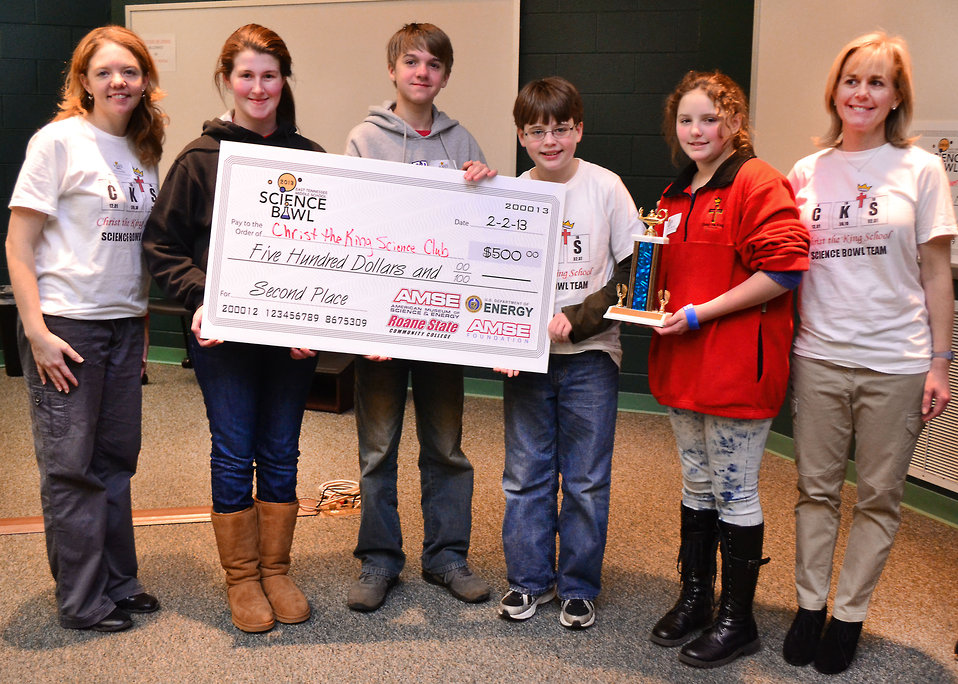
Christ the King School Second Place DOE Tennessee Middle School Science Bowl Oak Ridge

13-008 DOE photo Lynn Freeny DOE Tennessee Middle School Scence Bowl 2-2-2013 Oak Ridge Tennessee